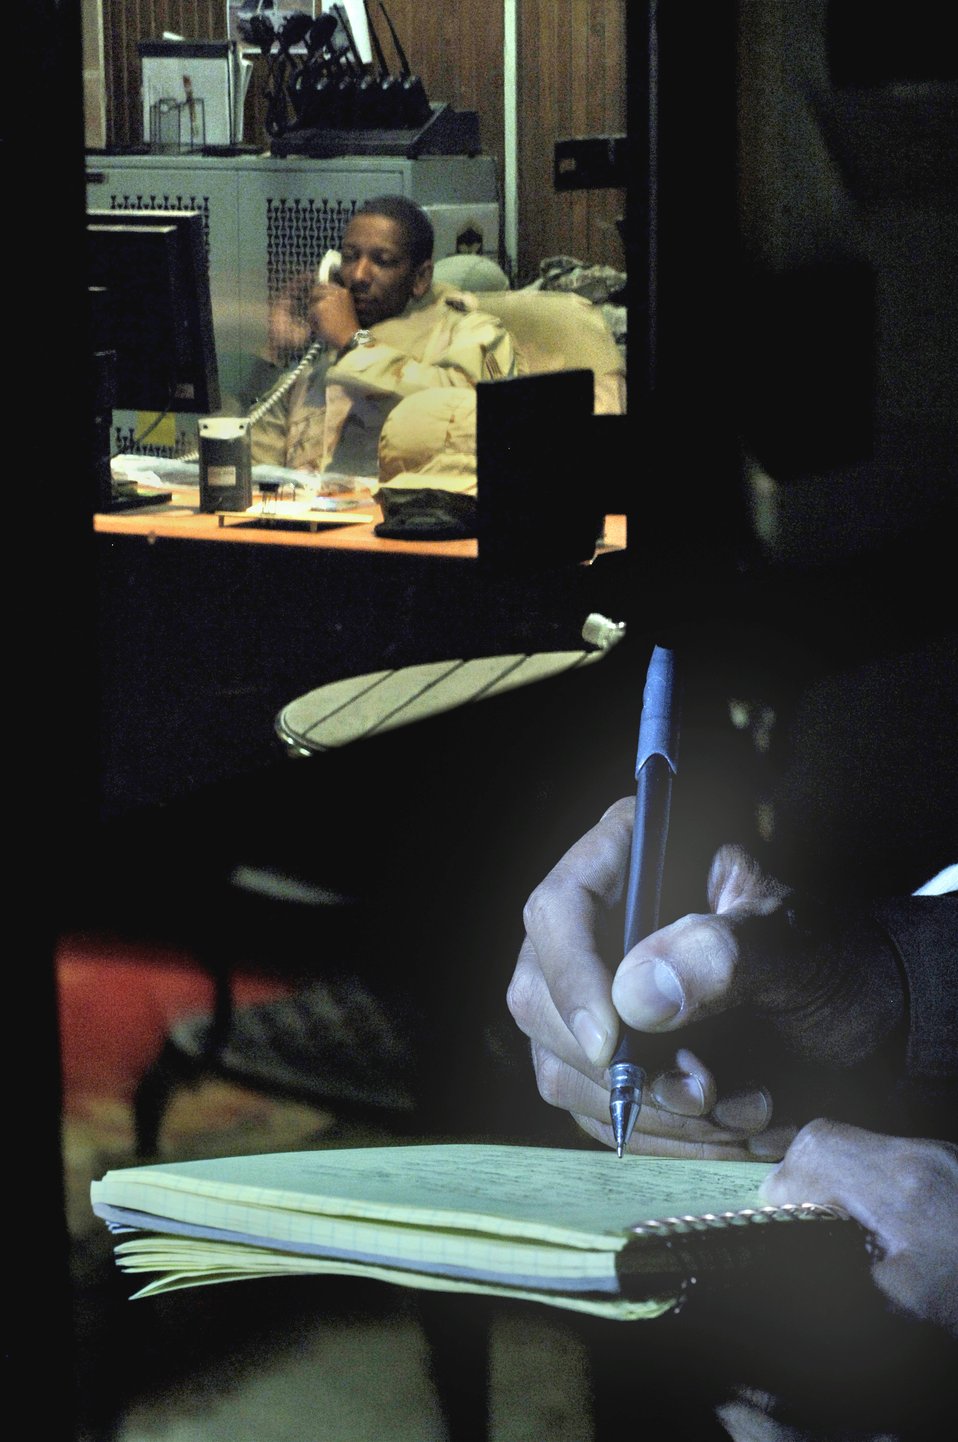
Tiger team tackles OPSEC violations

Unguarded communications in public are the most common violations of operational security, better known as OPSEC.